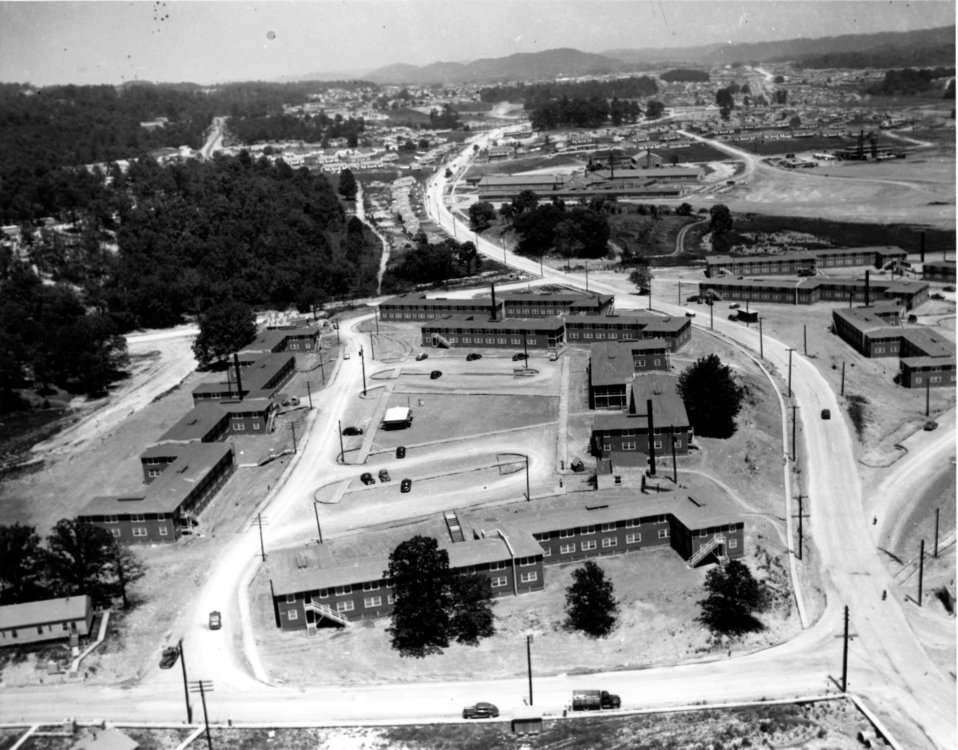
Aerial of Oak Ridge